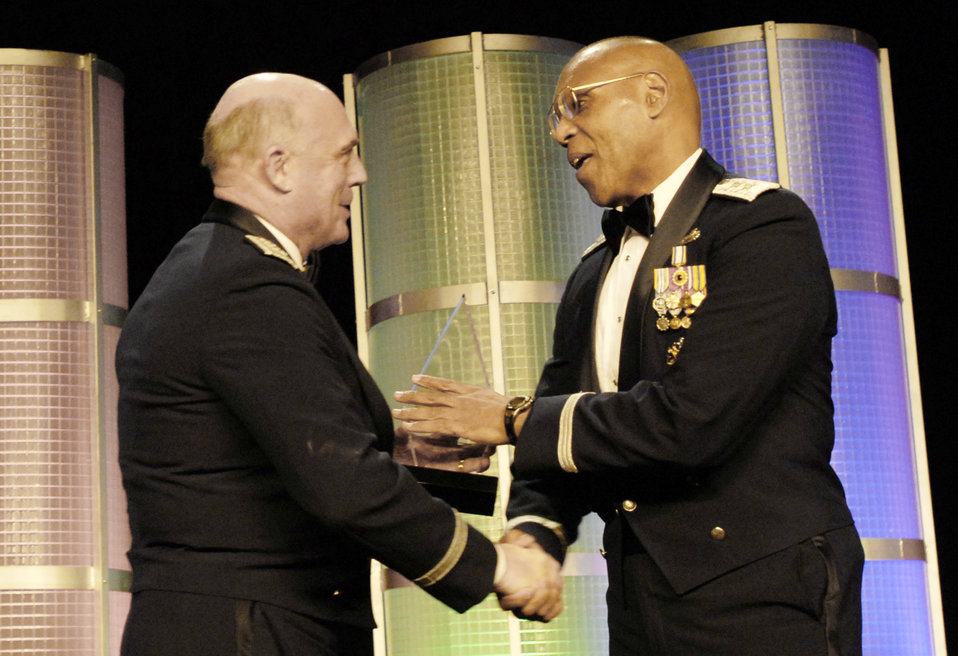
BEYA presentation

Air Force Vice Chief of Staff Gen. Carrol H